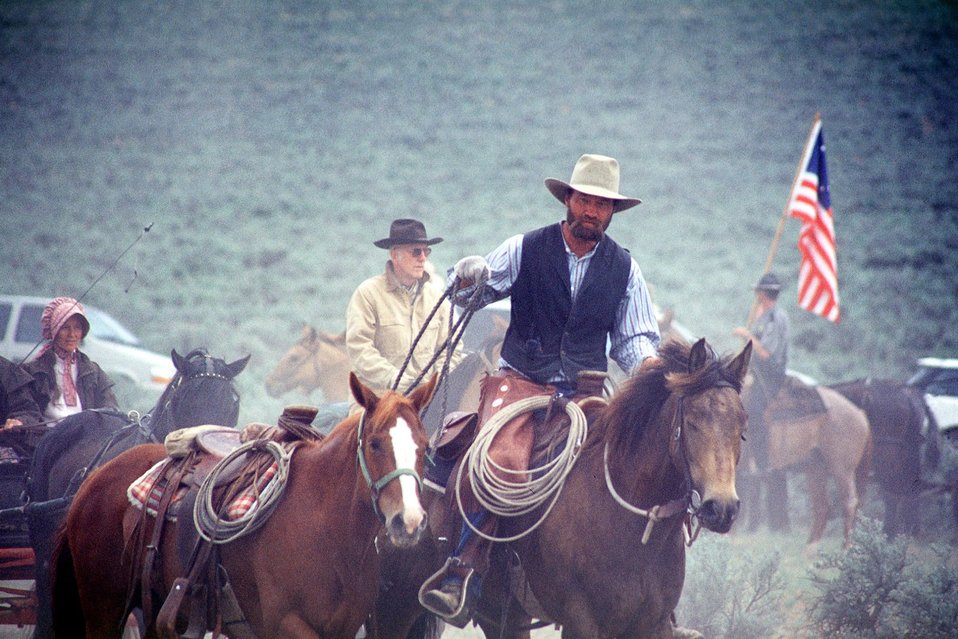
NHOTIC 10th Anniversary, wagon train reenactment. Pioneers and covered wagon on the Oregon Trail. State Trooper holding flag.